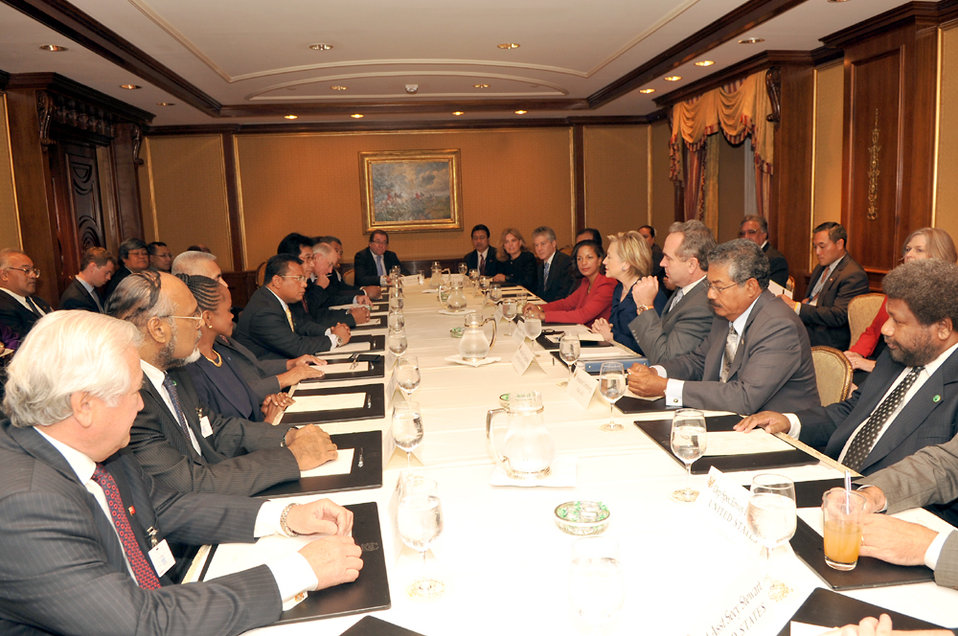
UNGA 2009: Secretary Clinton Meets With Pacific Island Leaders

U.S. Secretary of State Hillary Rodham Clinton meets with Pacific Island leaders at the Waldorf Astoria hotel during the 64th Session of the UN General Assembly in New York City, New York September 21, 2009.